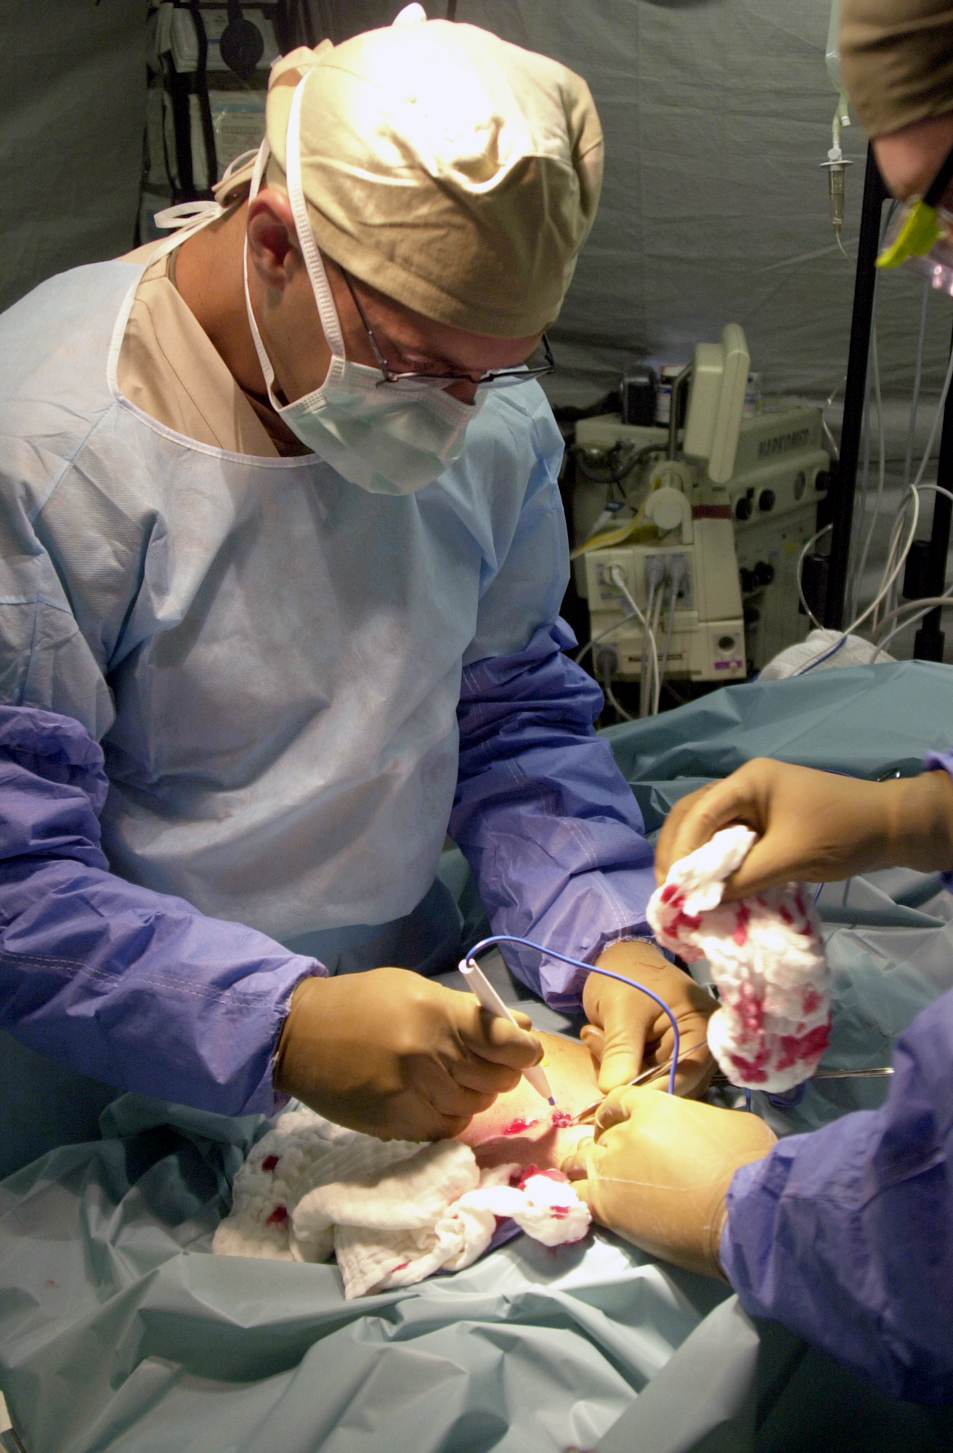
Surgeon's skills stay sharp helping base

ANDERSEN AIR FORCE BASE, Guam -- Maj. (Dr.) David Copp cauterizes some tissue surrounding a patient's cyst during surgery in an expeditionary medical support tent. Copp is a general surgeon with the 7th Expeditionary Medical Squadron and deployed here from Elmendorf Air Force Base, Alaska.